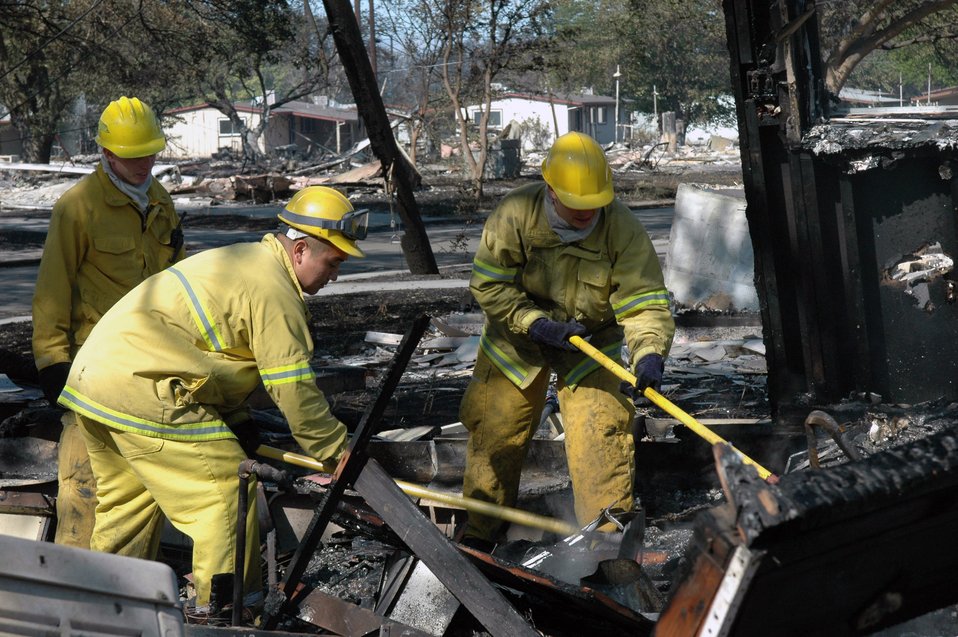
Travis, California firefighters extinguish blaze

Staff Sgt. Jason Rich (left) and firefighters Airmen 1st Class Spencer Snodgrass and Matthew Weber work to extinguish leftover hot spots following an eight-alarm fire that started Aug. 16 adjacent to Travis Air Force Base, Calif. Sergeant Rich is a 60th Civil Engineering Squadron Fire Department crew chief, and Airmen Snodgrass and Weber are base firefighters.